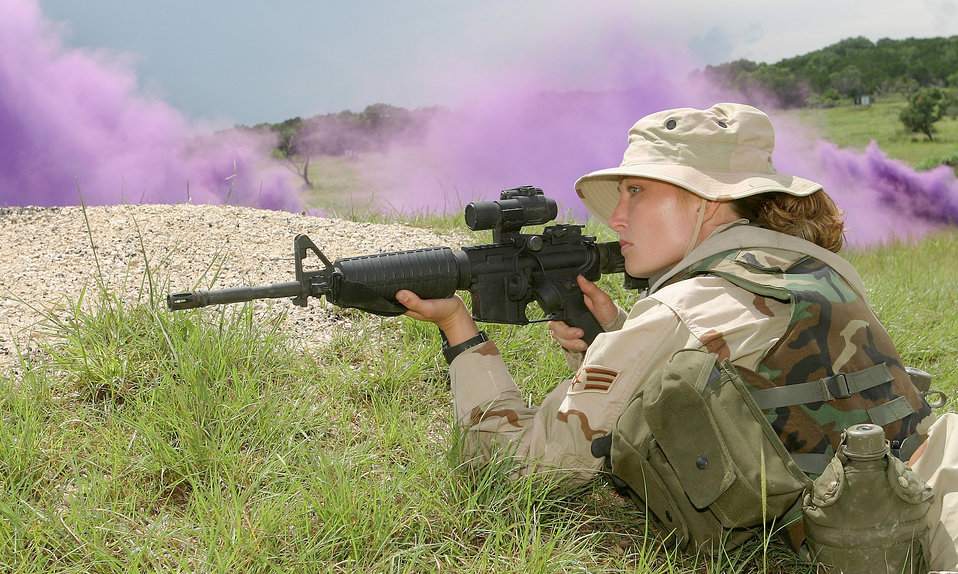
Purple haze

CAMP BULLIS, Texas -- Senior Airman Nola Ehrlund provides cover for a medevac helicopter during a basic combat convoy course demonstration here June 25.